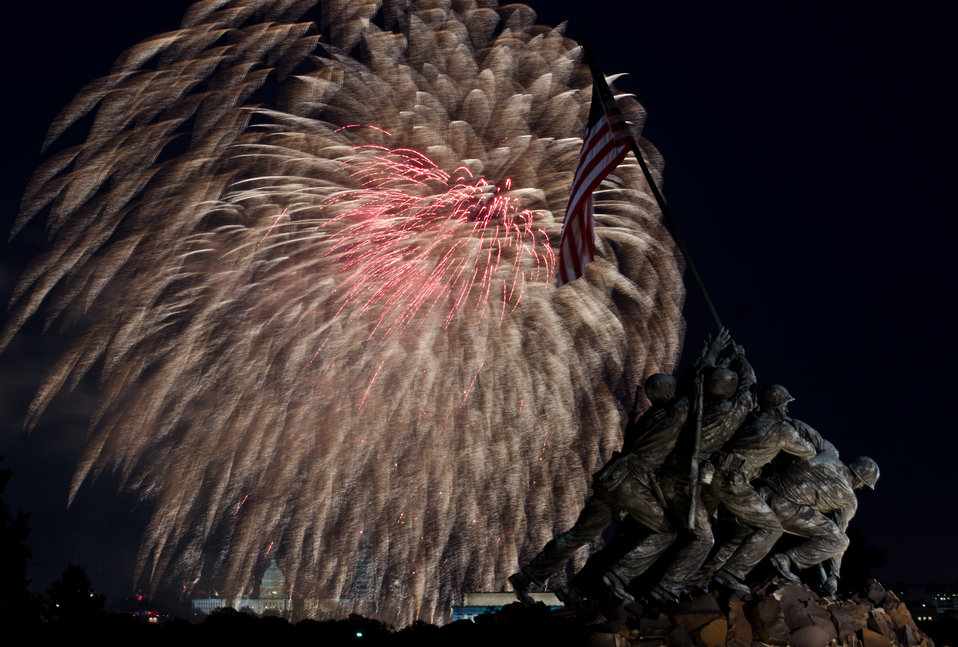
Independence Day celebration fireworks are seen from the Iwo Jima, U.S. Marine Corps Memorial in Arlington, VA on Jul. 4, 2013. In the distance are the Lincoln Memorial, the U.S. Department of Agriculture (USDA) Yates Building (dark red brick building), the Washington Monument (with scaffolding), and the U.S. Capitol building in Washington, D.C.